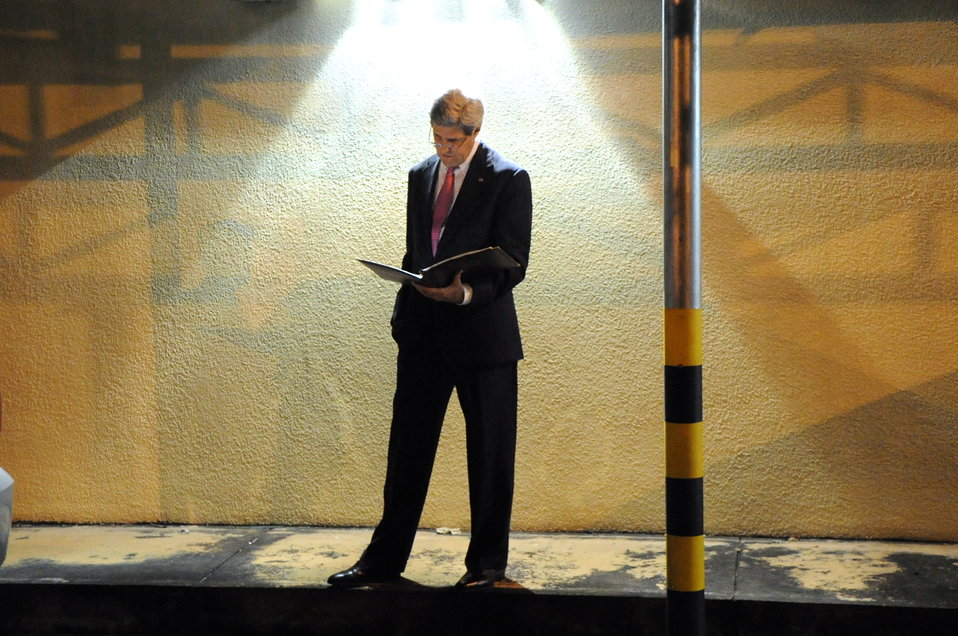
Secretary Kerry Prepares to Address Employees of Consulate Ho Chi Minh City

U.S. Secretary of State John Kerry checks his notes before addressing the staff of Consulate Ho Chi Minh City during a visit to Vietnam on December 14, 2013.